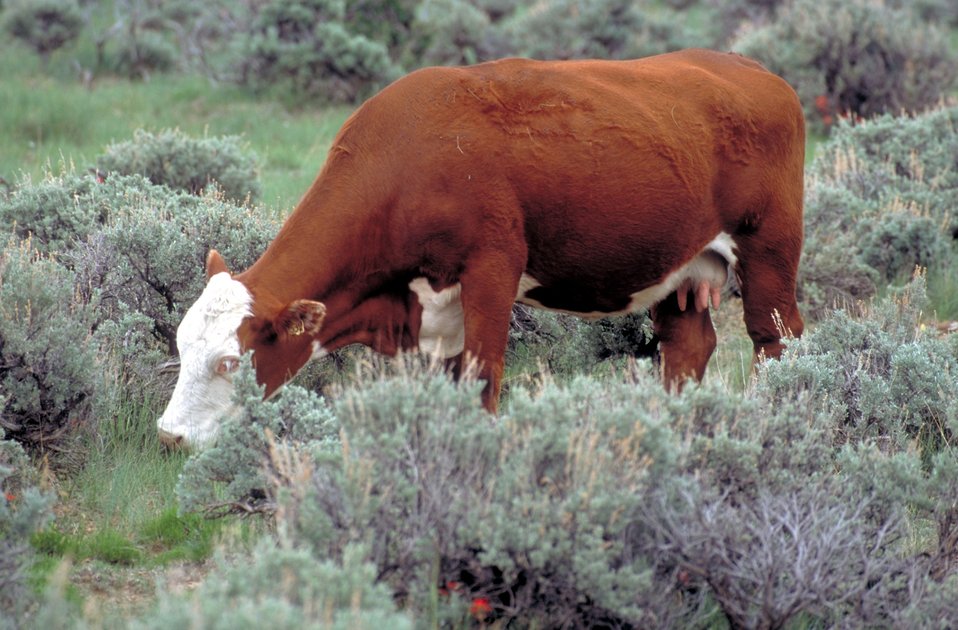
Livestock grazing on BLM lands near Price, Utah.